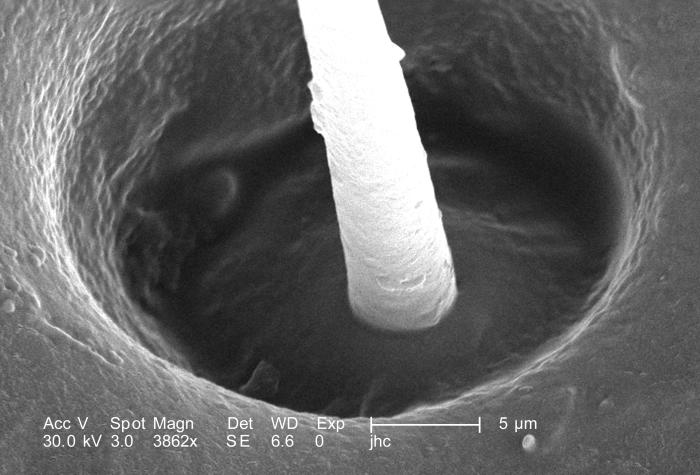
Under a high magnification of 3862X, this scanning electron micrograph (SEM) depicted the recessed base of a singe seta, or 'hair' emanating from the dorsum of an unidentified male Dermacentor sp. tick found upon a cat in the suburbs of Decatur, Georgia, which measured approximately 3.5mm from its gnathosoma (i.e., capitulum), which is where its mouthparts are located, to the distal abdominal margin (PHIL 9961). PHIL 9959 revealed all this tick's legs, placing it into the Phylum Arthropoda, i.e., from jointed ( 'Arthro'), and legs ('poda'), as well as the Class Arachnida, for they've eight of these legs, unlike insects, which use six appendages to move about. Setae are chitinous exoskeletal adnexae which are sensorial in nature, sensing environmental changes in temperature, movement, i.e., wind, and chemistry, i.e., pheromones.